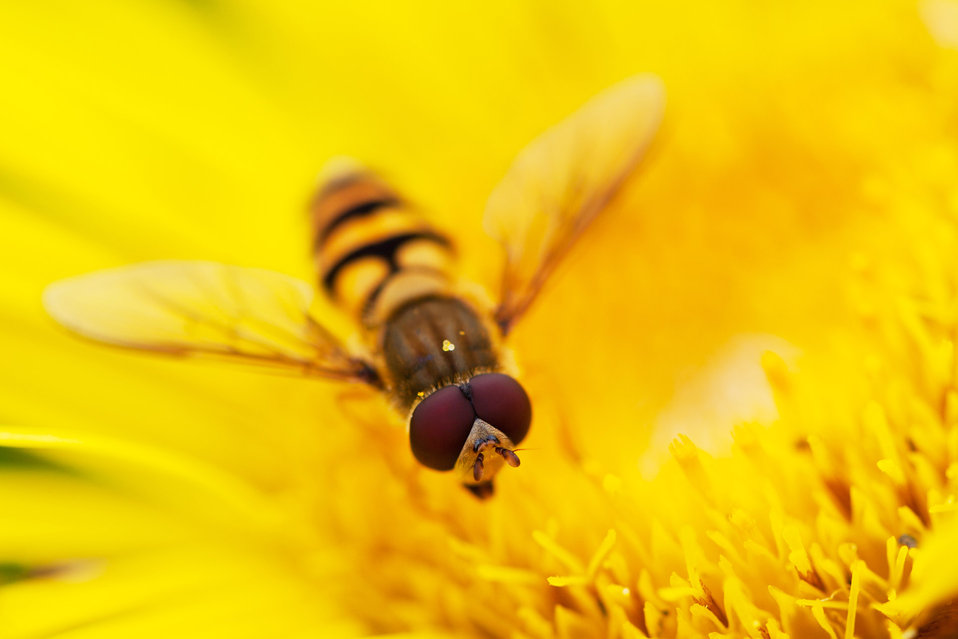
Hoverfly on a yellow flower.